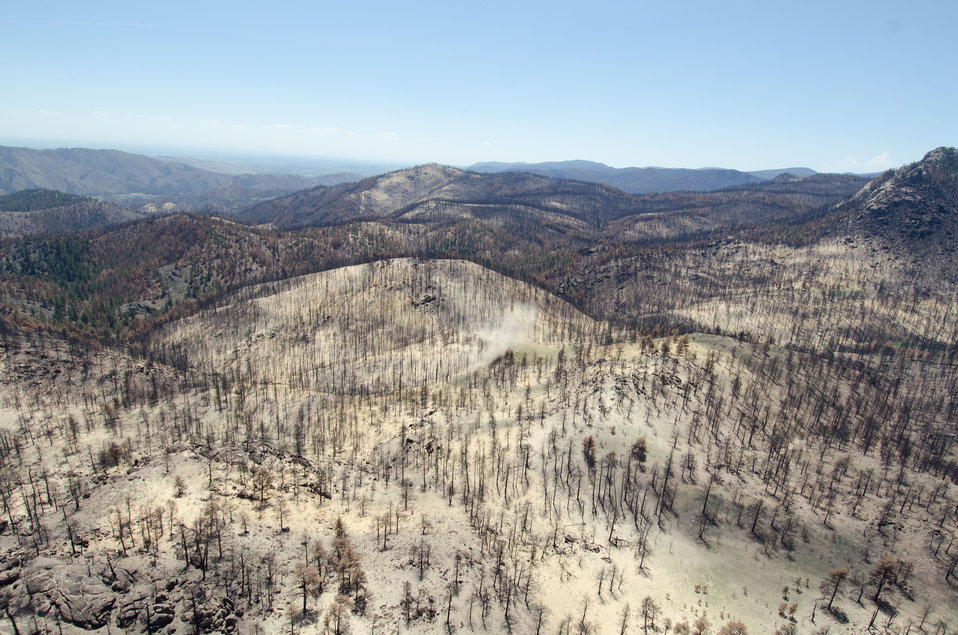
A ton of straw slowly falls during an aerial disbursement over a burned out area of the Poudre Canyon mountainside, on Friday, July 20, 2012, near Fort Collins, Colorado. This is an aerial application of straw that will mitigate soil and ash runoff from the mountainous terrain leading to Seaman Reservoir, drinking water resource for the City of Greeley. Forest Service lands receive straw, while private and other lands receive a seed mix and straw to promote ground cover plant growth on ash-covered lands. In total, 1,800 tons of straw will be applied during the 14-day operation. One quarter of the cost was paid by the City of Greeley and the U.S. Department of Agriculture funded the remainder. The Hewlett Gulch Fire was started by a camper’s alcohol stove, on May 14, at the saddle of a picturesque mountain ridge along the Hewlett Gulch Trail of Poudre Canyon, in the Roosevelt National Forest, 60 miles north of Denver. At it’s peak more than 400 firefighters were battling fires being pushed by 50 mph winds that helped blacken over 12-square-miles of dry ground cover, brush and trees. Many of the trees were already dead and tinder dry from beetle-kill. Their efforts have successfully kept water in the reservoir clean and clear, while downstream water flow has gone from famous Colorado clear water to nearly black flows of water heavily laden with ash, silt, and burnt debris that recent thunderstorms have already washed down from the mountainsides.